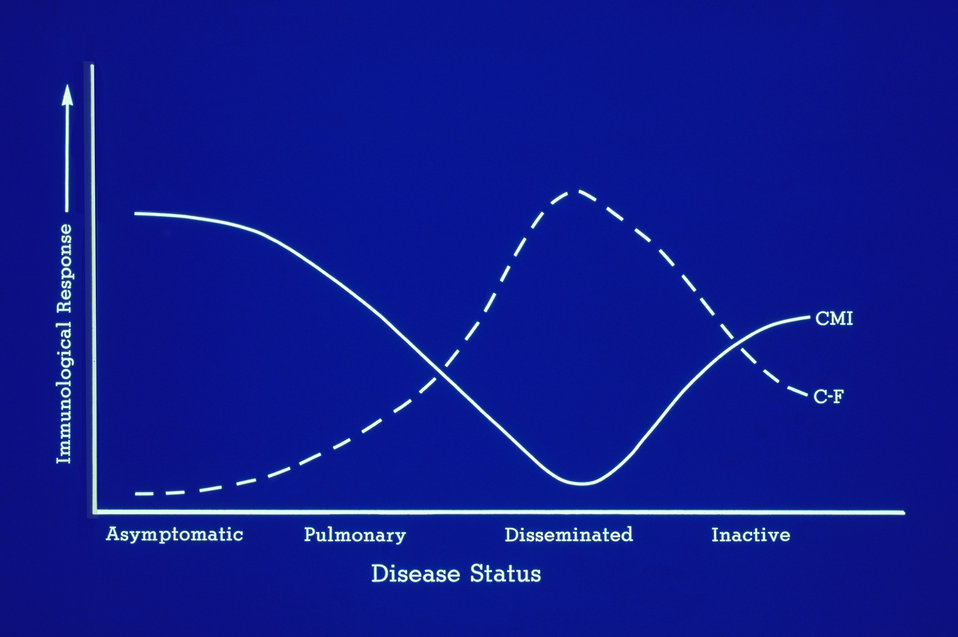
Immune responses during coccidioidomycosis